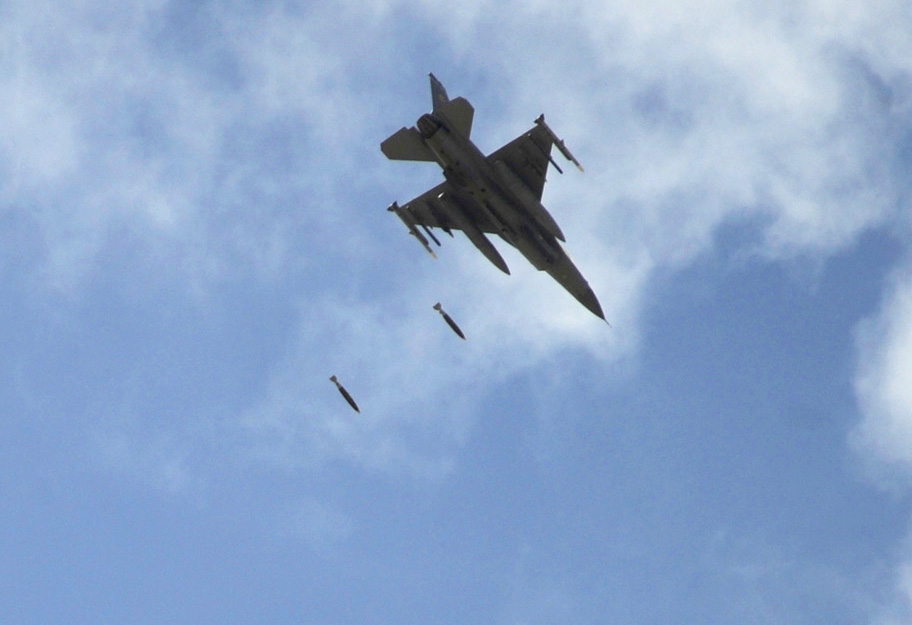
On target, on time

An F-16 Fighting Falcon drops two 500-pound bombs on a target during the Falcon Air Meet 2010 Nov. 1, 2010, at Muwaffaq Salti Air Base in Azraq, Jordan. The F-16 is with the 77th Fighter Squadron at Shaw Air Force Base, S.C.